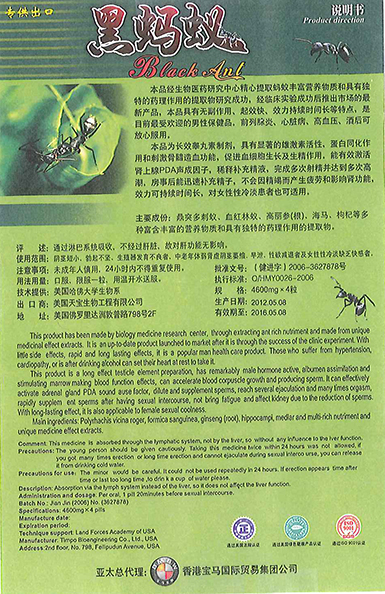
RECALLED – Dietary Supplement

April 1, 2014 – Product Recall – Nova Products, Inc. Issues Voluntary Nationwide Recall of Dietary Supplements with Undeclared Active Pharmaceutical Ingredients.